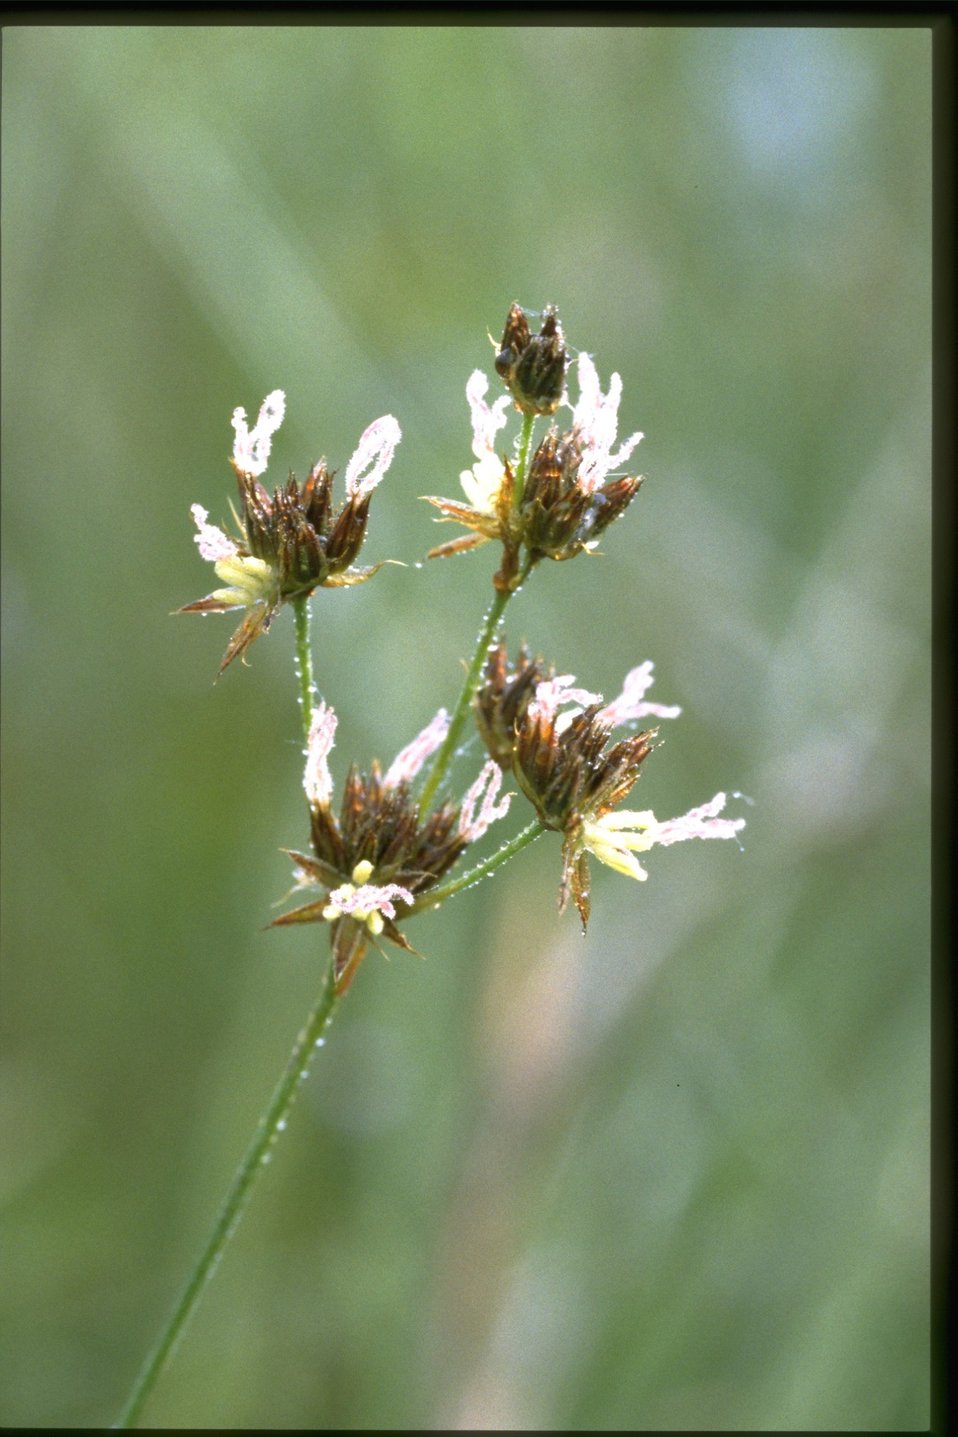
Closeup shot of Luncus.